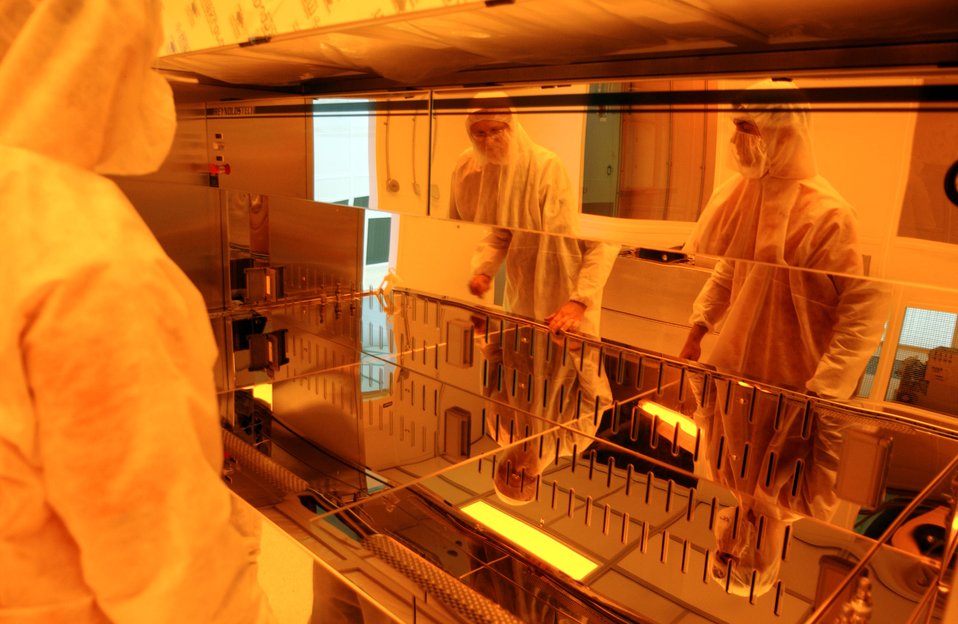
Clean Room at Center for Nanophase Materials Sciences

05-220-227 DOE photo by Lynn Freeny
Clean Room at Center for Nanophase Materials Sciences Oak Ridge National Lab. Oak Ridge Tennessee 8-16-2005